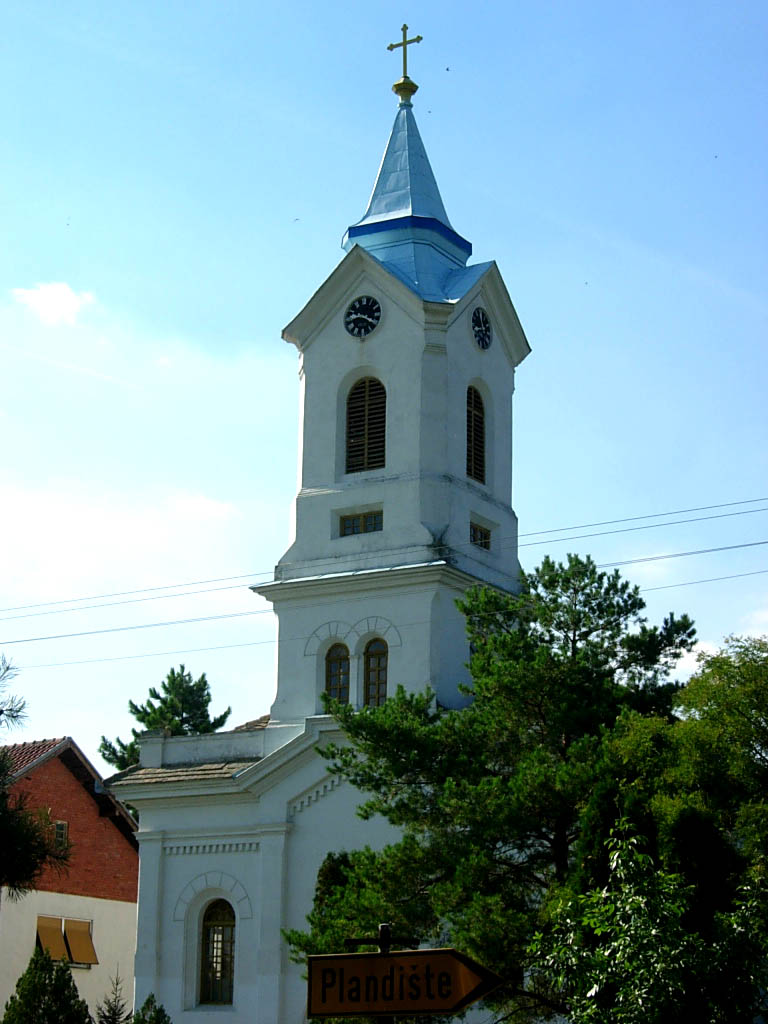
The Evangelical (Slovak) church in Janošik. Српски / srpski: Slovačka evangelistička crkva u Janošiku. Magyar: Az újsándorfalvi evangélikus (szlovák) templom.